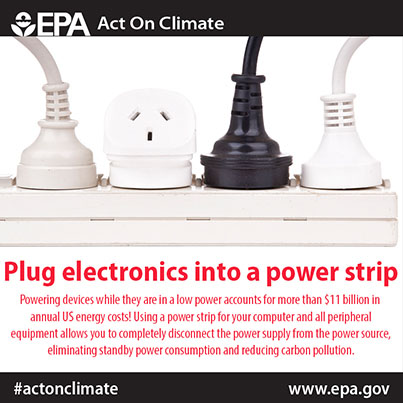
Plug electronics into a power strip

Use a powerstrip to reduce your energy consumption, save money and #ActOnClimate www.epa.gov/earthday/actonclimate